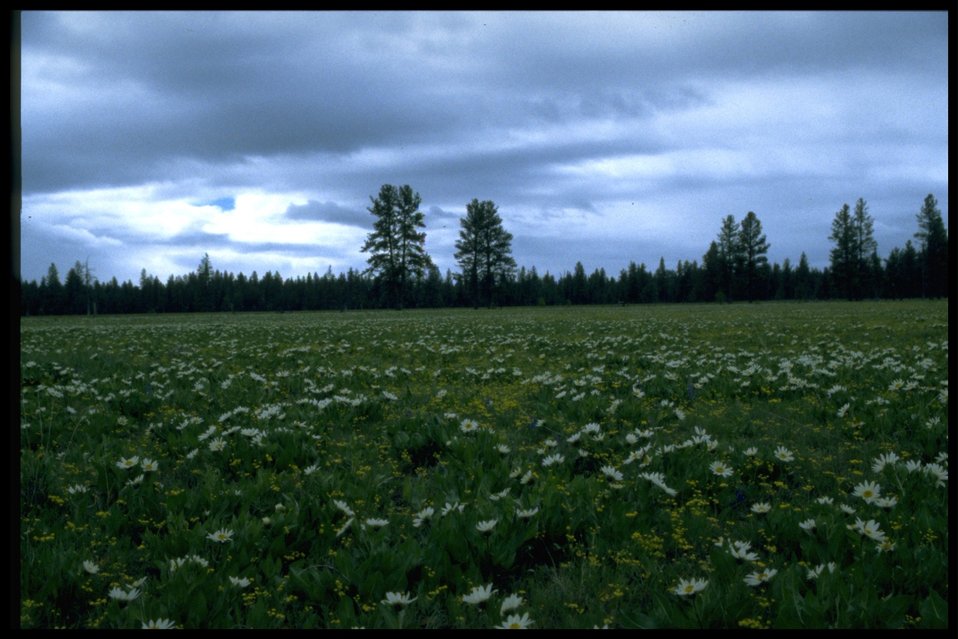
Prairie display of white-rayed mule's ears (Wyethia helianthoides) and slenderfruit lomatium (Lomatium leptocarpum).